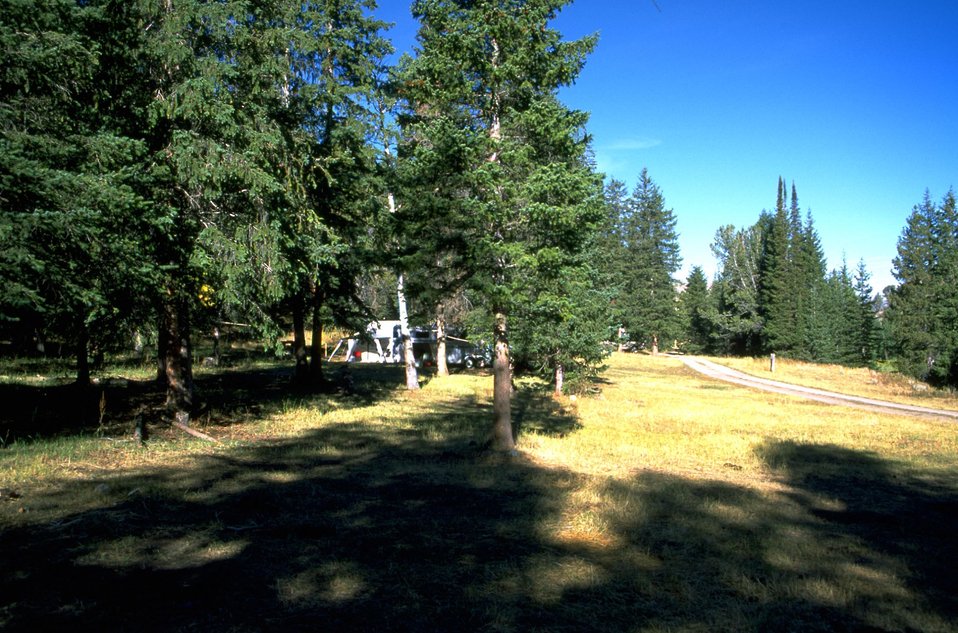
Camp in the Centennial Mountains